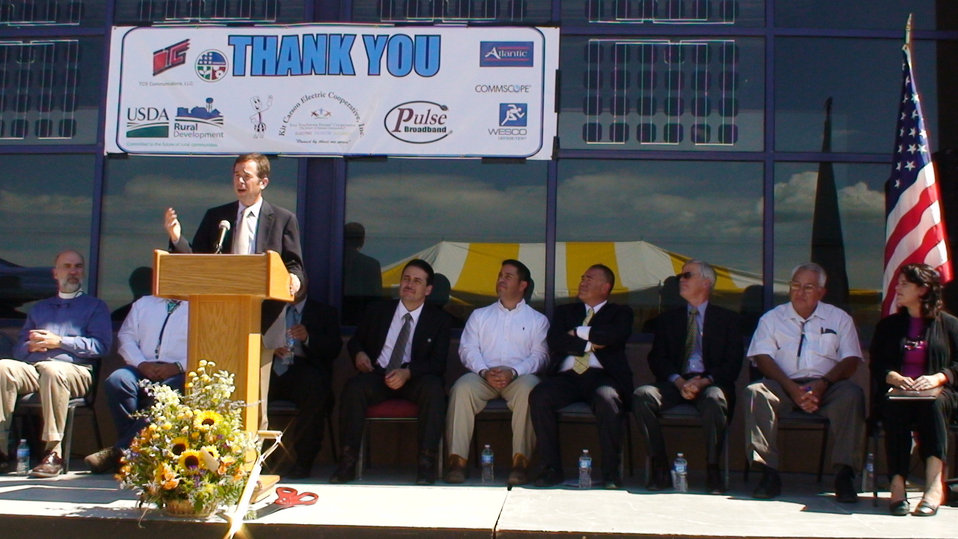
Agriculture State Director for New Mexico Terry Brunner speaks at the $64 million broadband fiber-to-the-home project groundbreaking ceremony held by the Kit Carson Electric Co-op (KCEC) on Friday, Aug. 17, 2011 in Taos, NM. KCEC’s project to build an emergency command and communications center for the region is now complete and the two projects are linked since the command center will act as project headquarters for the broadband build-out. The rural broadband project will extend 100 mbps service at very affordable rates to over 20,000 rural residents of Taos, Colfax and Rio Arriba counties in NM. The American Recovery and Reinvestment Act (ARRA) provided 70 percent of the dollars and 30 percent came from the Co-op. In addition to economic development, educational, public safety and healthcare applications, the broadband project will also enable ‘smart grid’ and ‘green grid’ applications with increased opportunities for new jobs.